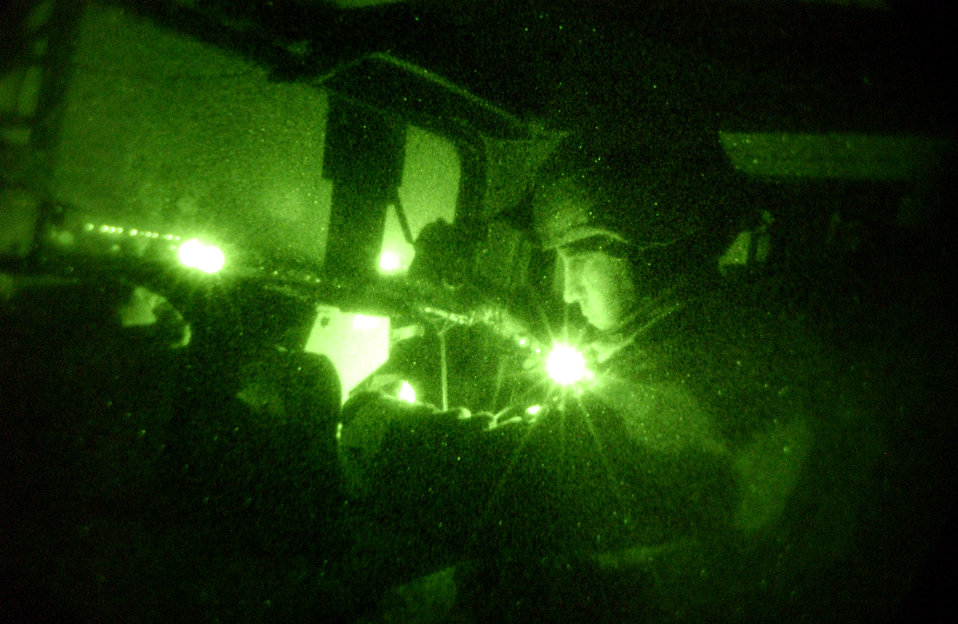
Airmen keep base safe in austere conditions

IRAQ -- Staff Sgt. Jason Seaborn references a map during a nighttime patrol near Kirkuk Air Base. Security forces Airmen make nightly trips off base to ensure security of base people. He is assigned to the 506th Expeditionary Security Forces Squadron.